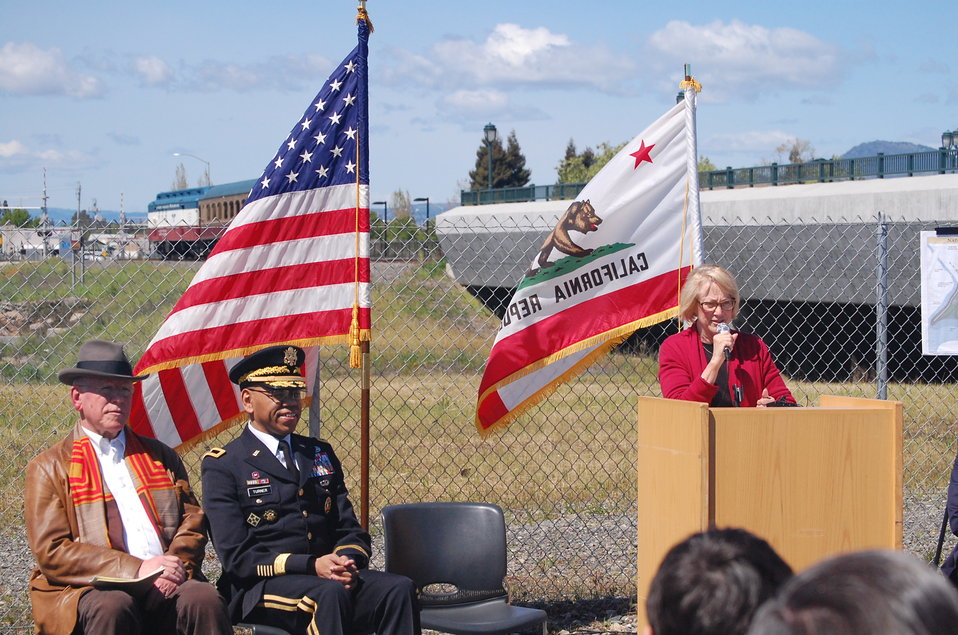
Corps joins Rep. Mike Thompson, Napa officials to break ground on new dry bypass

Napa Mayor Jill Techel provides introductory remarks during a ground breaking ceremony to officially start construction on a dry bypass April 5, 2014, at the site of the future bypass in Napa, Calif. Construction of the bypass is the culmination of more than a decade of work and will provide more than half of the flood risk reduction benefit provided by the project, significantly reducing the flood risk for residents and businesses in downtown Napa.